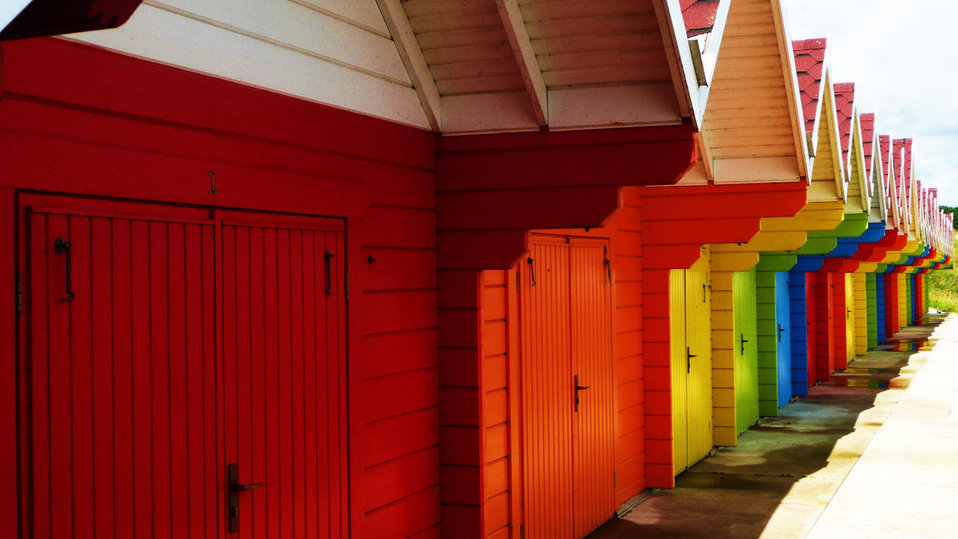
Dressing rooms on the beach.